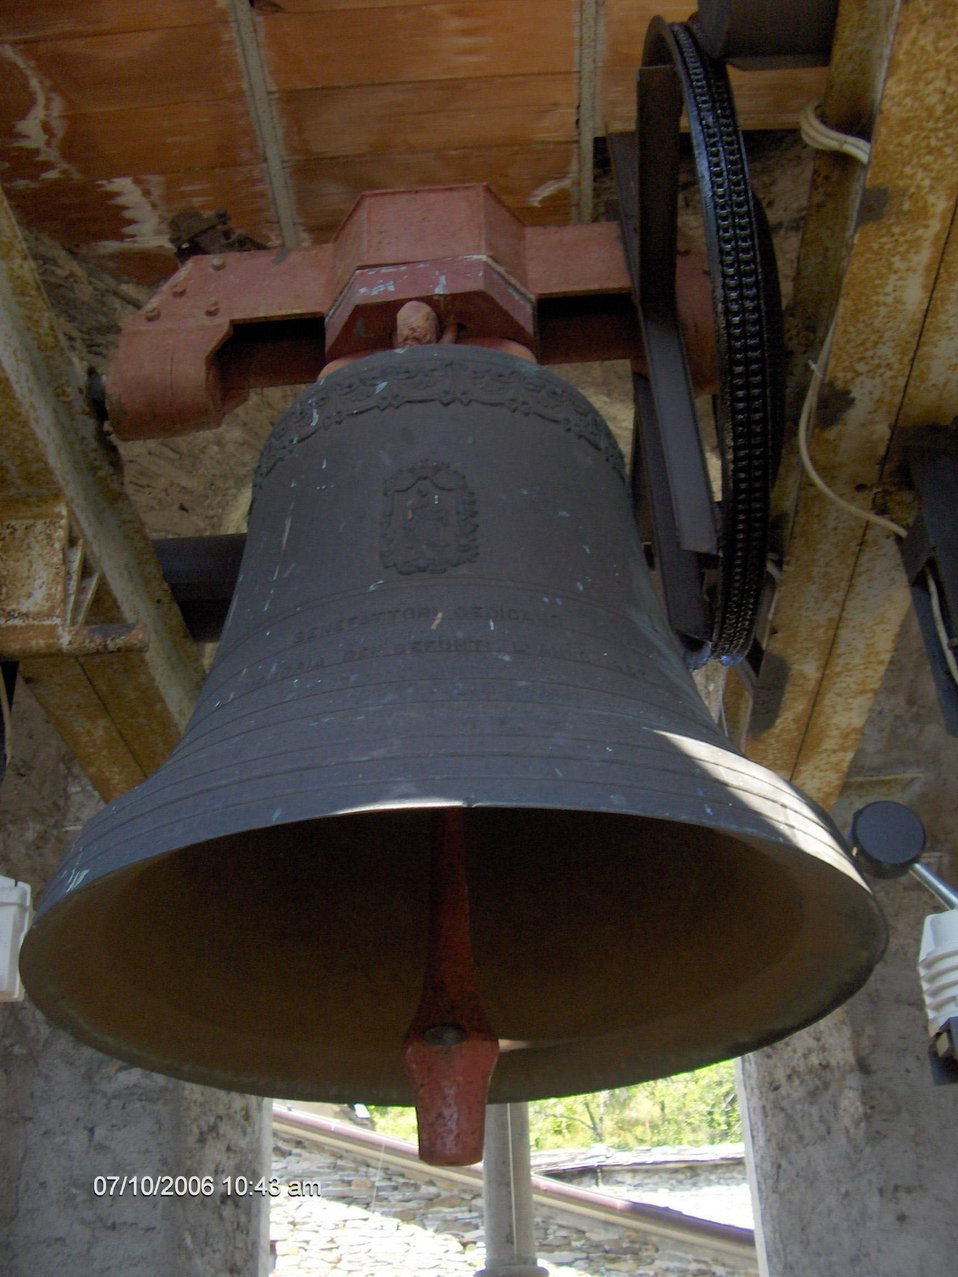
Italiano: Campane maggiore del campanile di Volegno